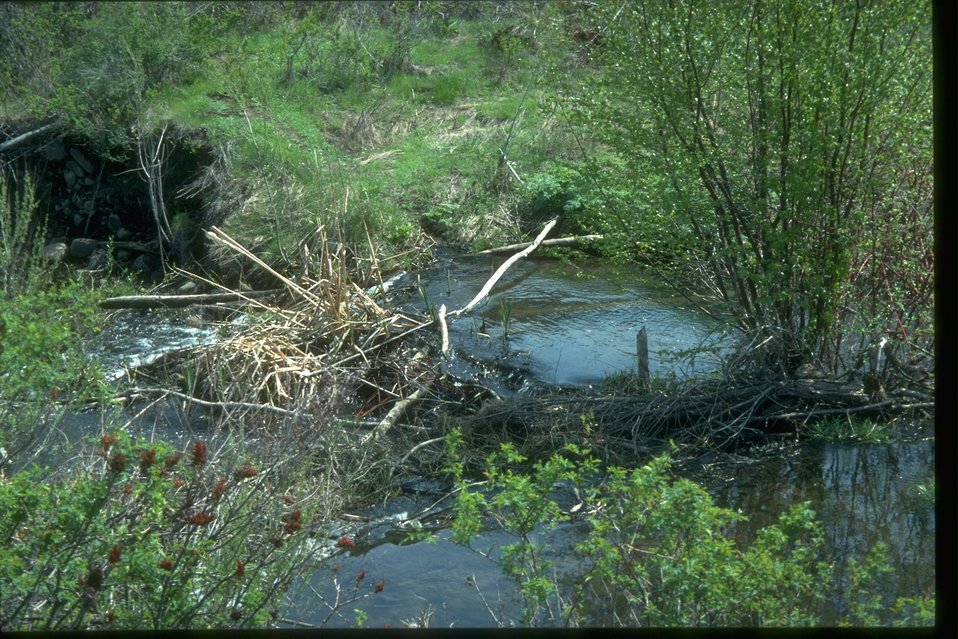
Beaver dam in Douglas Creek in Douglas County, WA.